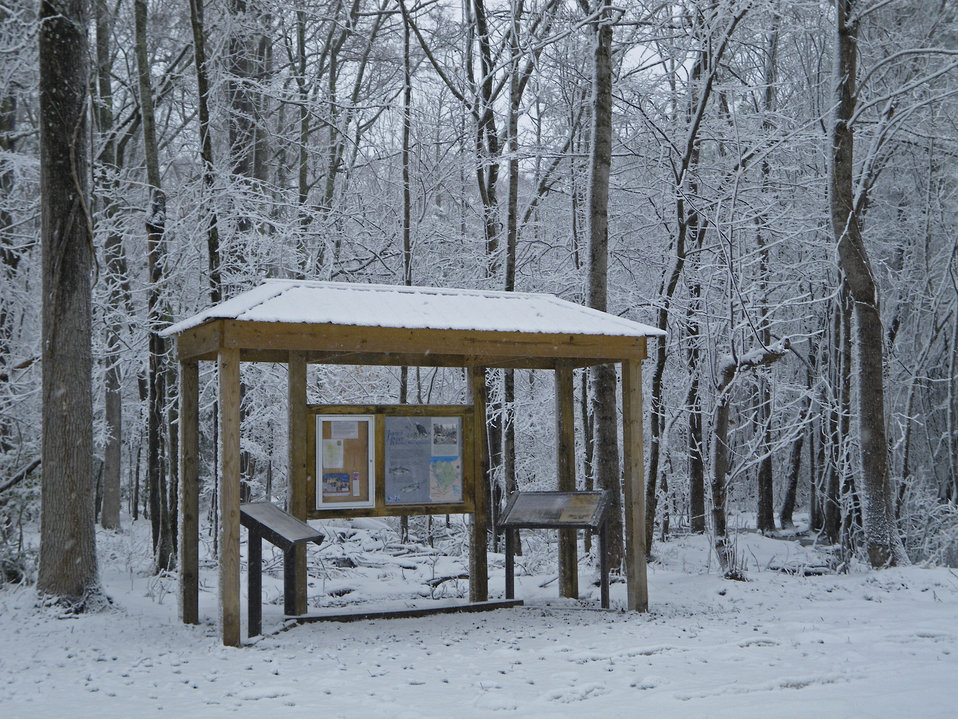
Winter hiking

James River National Wildlife Refuge, VA.